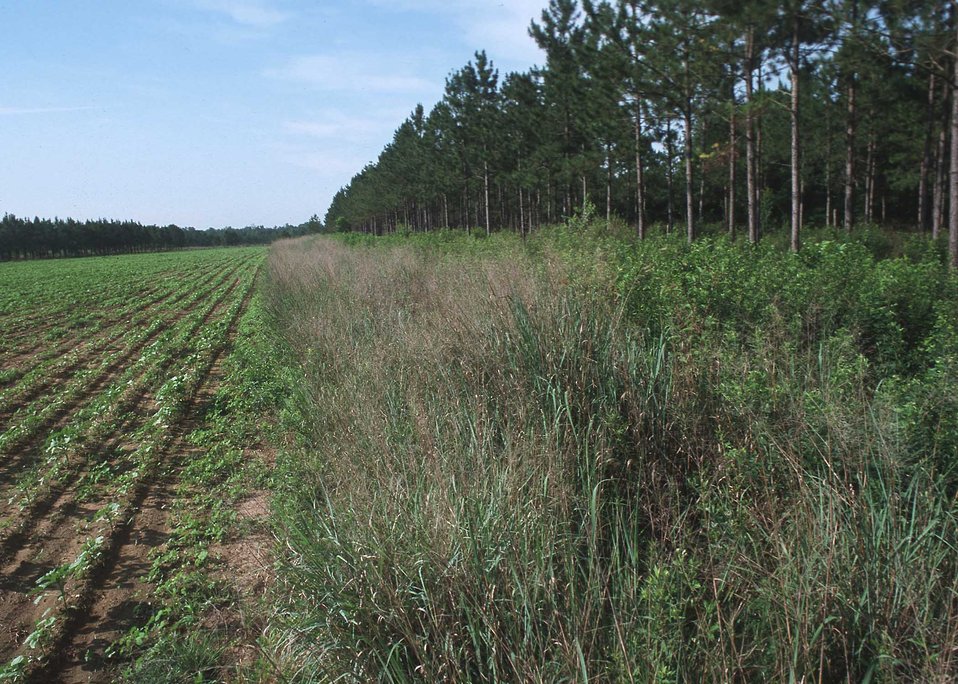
Field borders provide excellent wildlife habitat for a variety of species, including ground nesting birds.